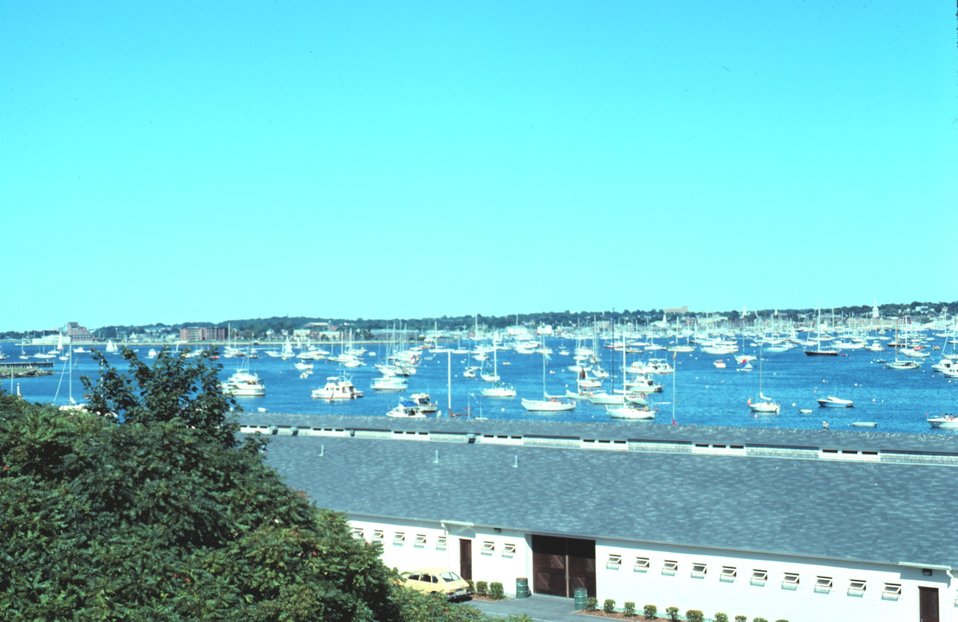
Newport Harbor - haven for thousands of pleasure boats